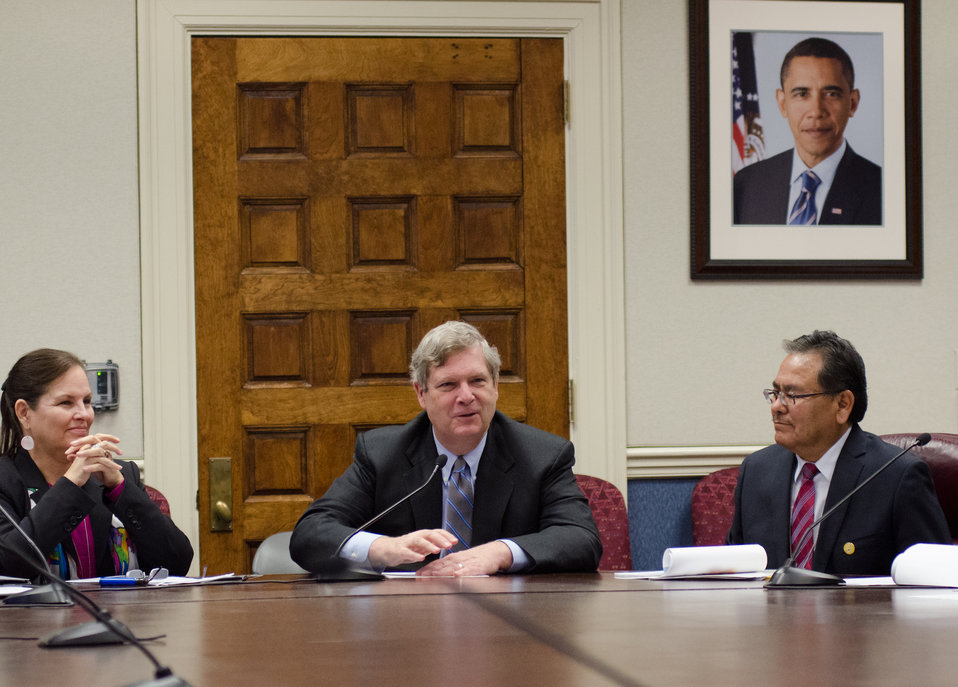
Agriculture Secretary Tom Vilsack (c) Cankdeska Cikana Community College President Cynthia Lindquist, left, Fort Totten, North Dakota; and Navajo Technical College President Elmer Guy, right, Crownpoint, New Mexico, during the U.S. Department of Agriculture and American Indian Higher Education Consortium Leadership Group Winter Meeting, at the USDA Whitten Building, Williamsburg Room, in Washington D.C., on Friday, Feb. 8, 2013.